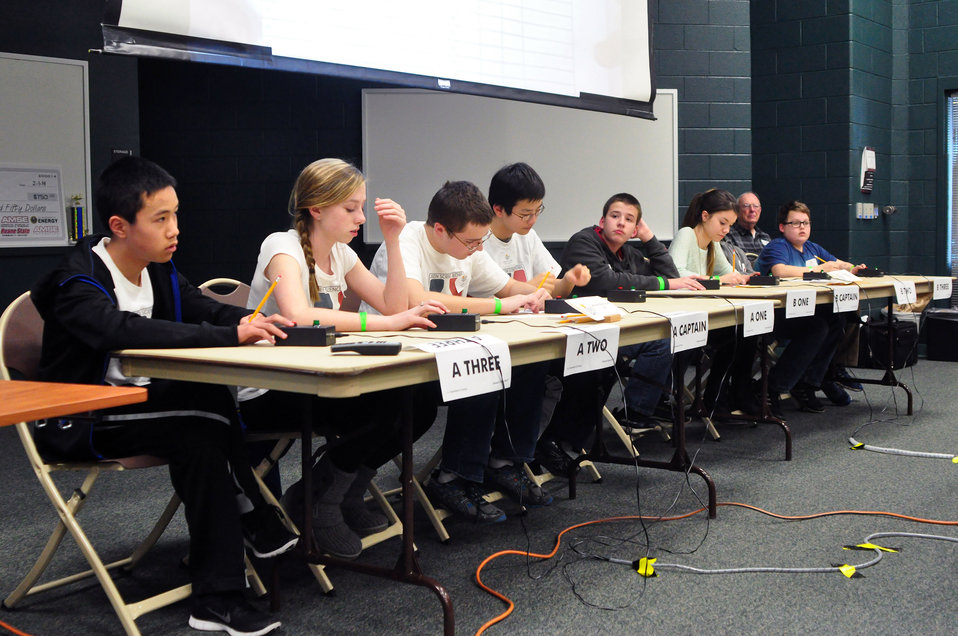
Jefferson Middle School and Cedar Springs Home School

14-017 DOE photo Lynn Freeny 2-1-2014 Oak Ridge Tennessee